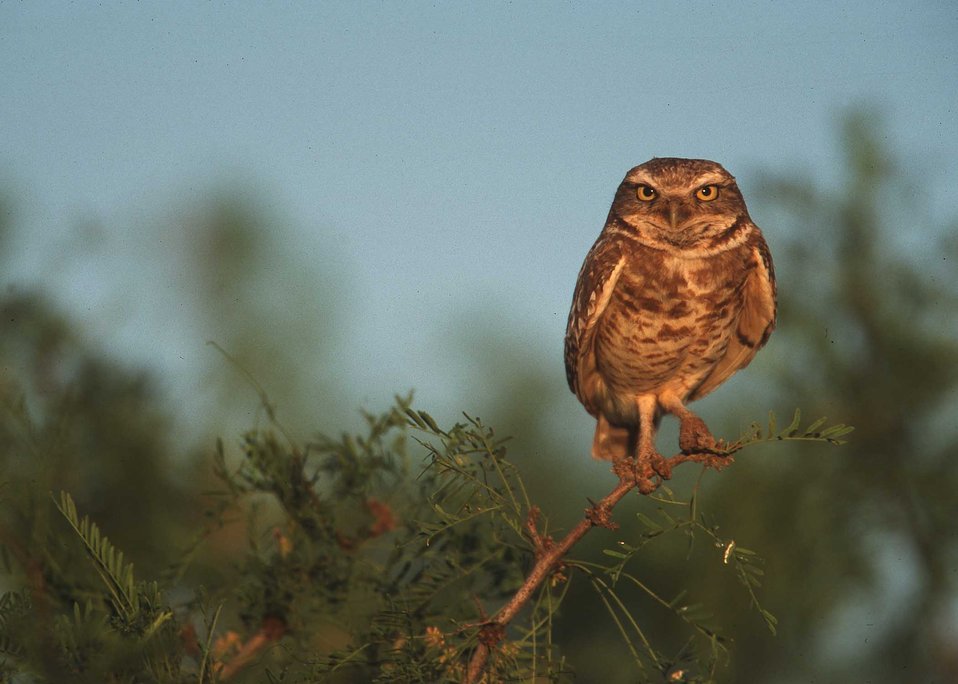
Burrowing owl.